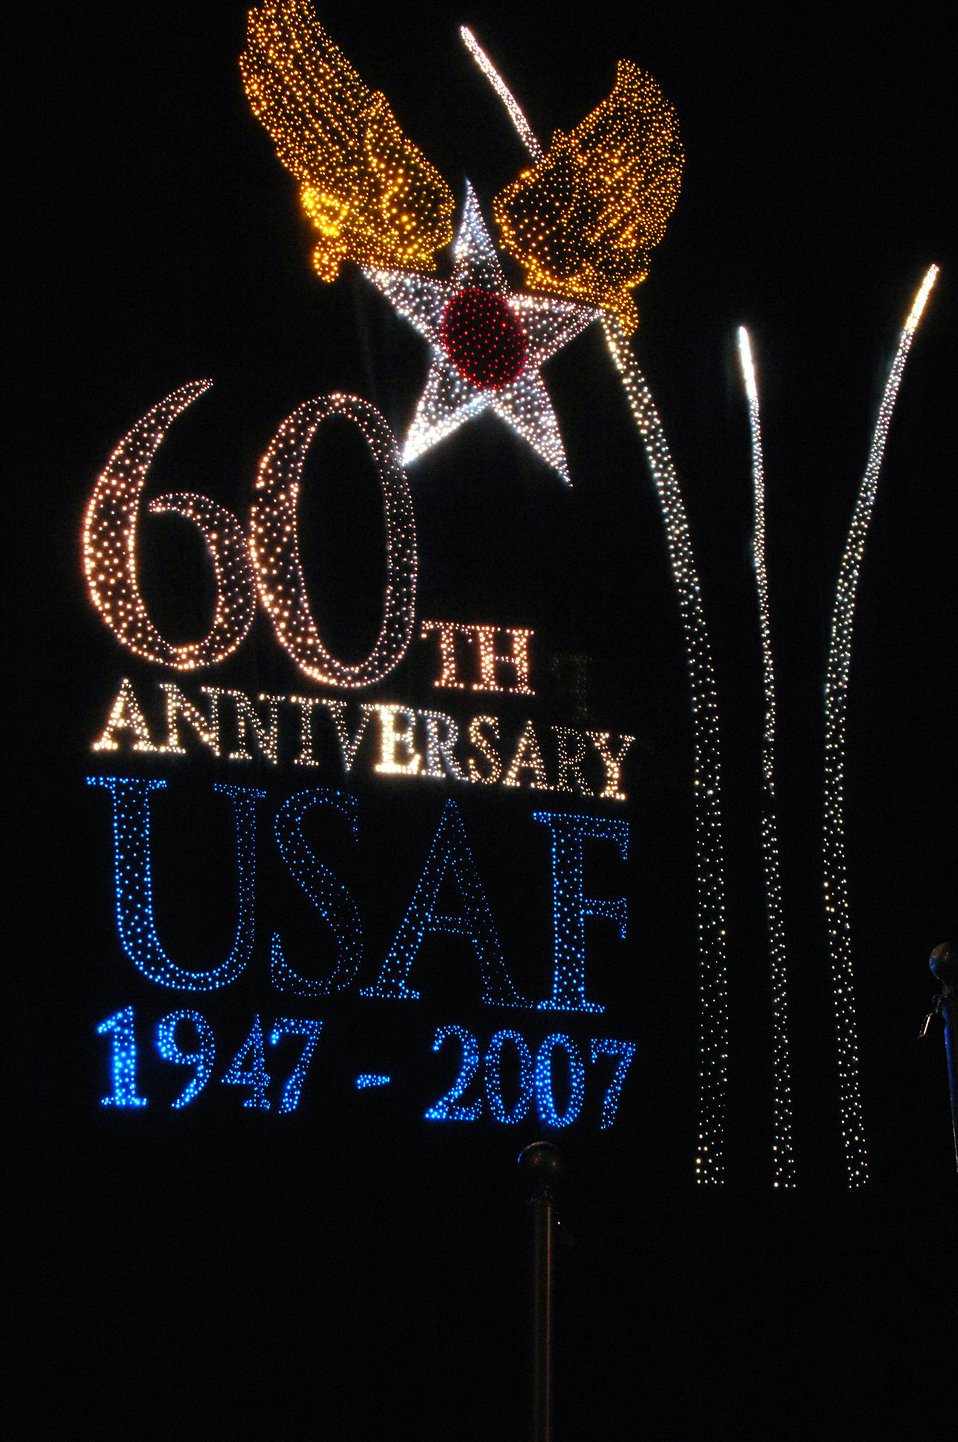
Tops in Blue Airmen strut their stuff

Tops in Blue Airmen pay tribute and celebrate the Air Force's 60th anniversary during the performance at the Tays Center near Holloman Air Force Base in Alamogordo, N.M. The 40-member group's goal is to enhance mission productivity for Air Force members around the world. Tops in Blue showcases music, dance and comedy, all performed by active-duty Airmen who perform 90 minutes of non-stop live entertainment.